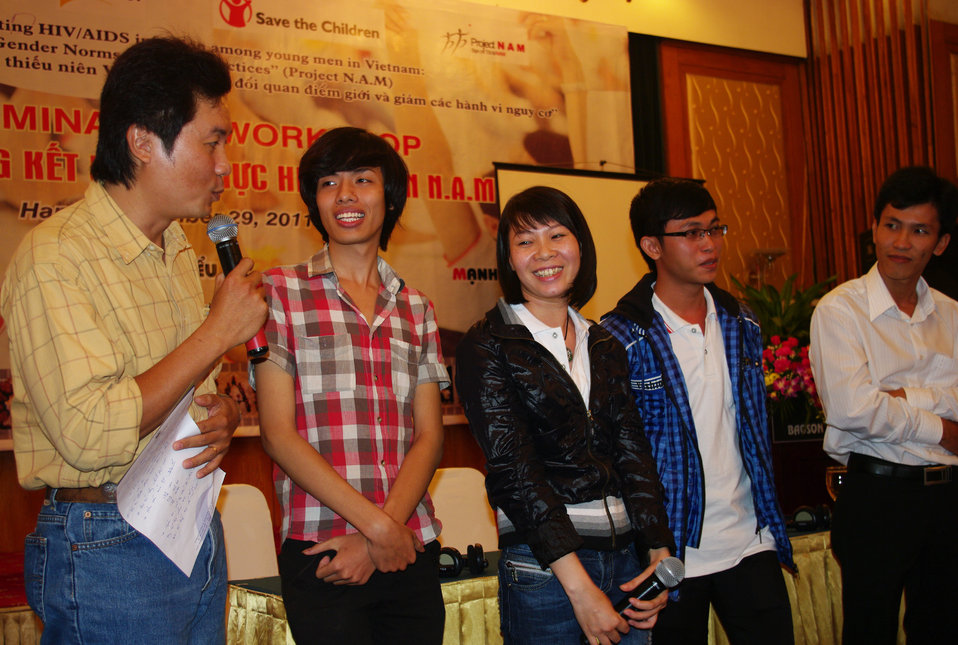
USAID Supports HIV Awareness among Street Youth and Young Men

Trainers and peer educators tell their stories on November 29, 2011, in Hanoi, Vietnam